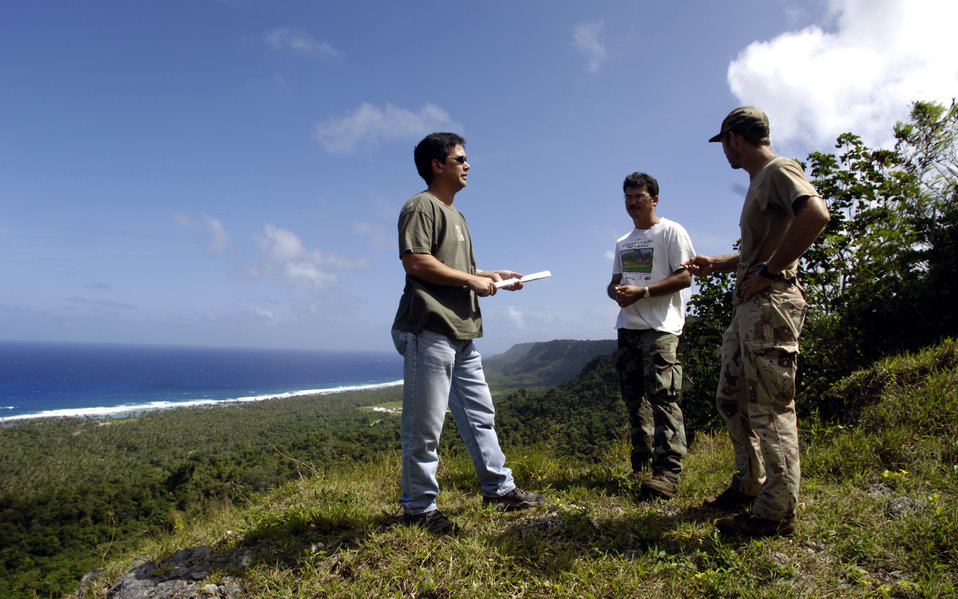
Saving endangered species

ANDERSEN AIR FORCE BASE, Guam (AFPN) -- Dana Lujan (left), Jeff Quitugua and Chris Jones (right) discuss the endangered Marianas crow. Mr. Lujan is the liaison for the Guam Department of Agriculture, which has a partnership with the base to re-introduce the Marianas crow back to the island. Mr. Lujan is the 36th Expedition Air Wing's chief conservation officer. Mr. Quitugua is a wildlife biologist and Mr. Jones is a wildlife technician from the Guam Department of Agriculture.